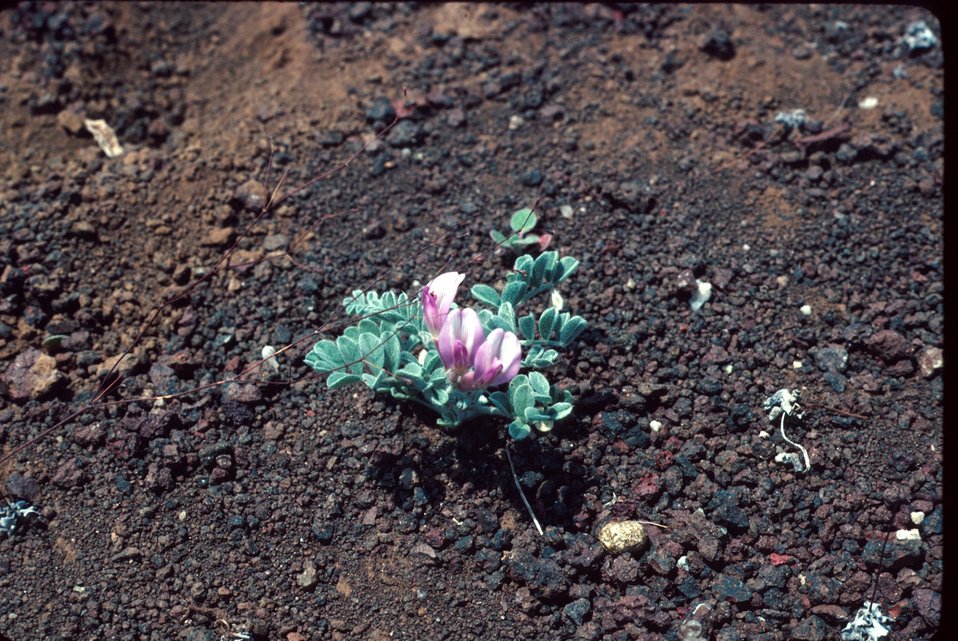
Astragalus nudisiliqus Wildflower Milkvetch